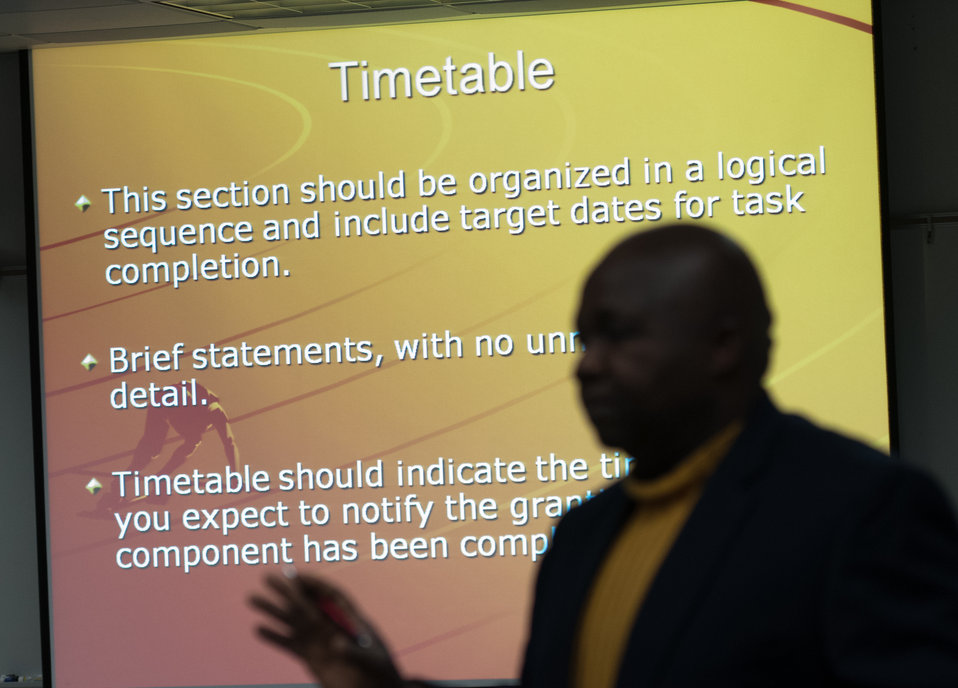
U.S. Department of Agriculture (USDA) National Institute of Food and Agriculture National Program Leader Dr. Denis Ebodaghe provides some insight to the importance of a proposed grant timetable to farmers at the “Virginia State University (VSU), USDA and Virginia Farmers Working Together” outreach workshop in the VSU, L. Douglas Wilder building on Thursday, March 7, 2013, in Petersburg, VA. Farmers shared and learned new ways to do more with USDA services, and how to apply for programs that will help grow their business.